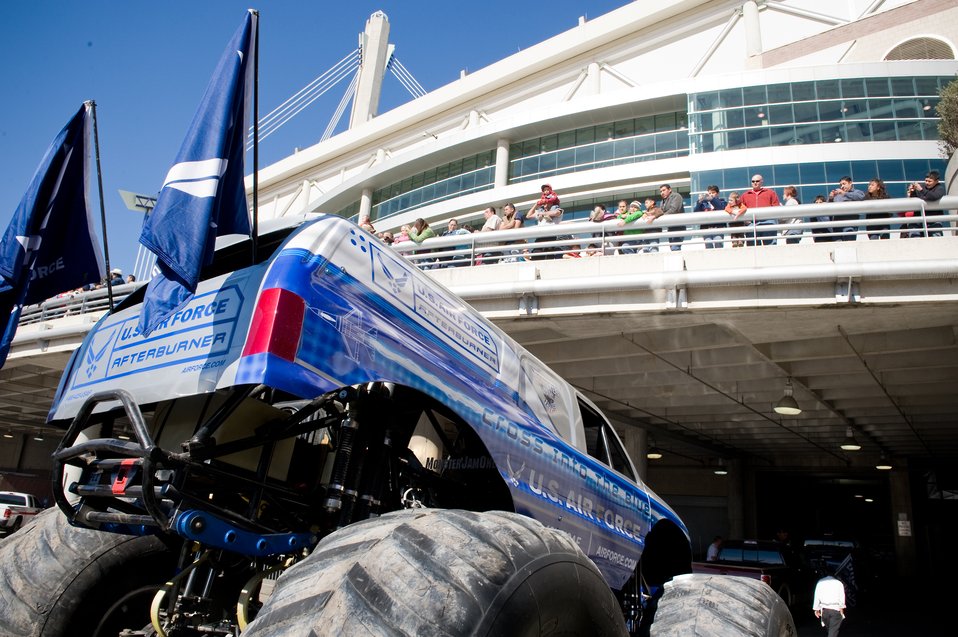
AF flies high at Monster Jam

2009 Monster Jam fans got an eyeful at the Alamodome on Jan 11 in San Antonio when Air Force Afterburner and 15 other monster trucks were staged to make their entrance into the Alamodome. Approximately 45,000 people attended the event. This monster truck has a 540 cubic-inch Merlin supercharged racing V-8 engine that churns out 1,425 horsepower for its driver, Damon Bradshaw. The 10,000-lb vehicle can launch from mounds of dirt and crushed cars to a height of more that 40 feet in the air. Afterburner is equipped with four-wheel steering and can be made to continuously spin on a dime. The wheels and tires are 66